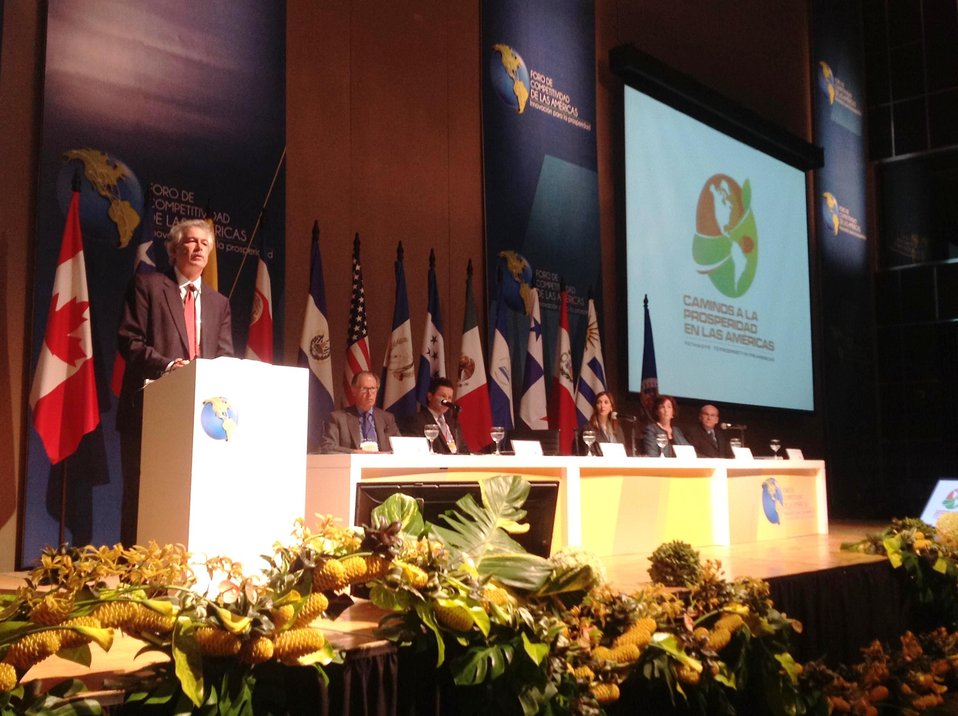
Deputy Secretary Burns Delivers Remarks at the Pathways to Prosperity Ministerial

Deputy Secretary of State William Burns delivers remarks at the Pathways to Prosperity Ministerial in Cali, Colombia, October 23, 2012.